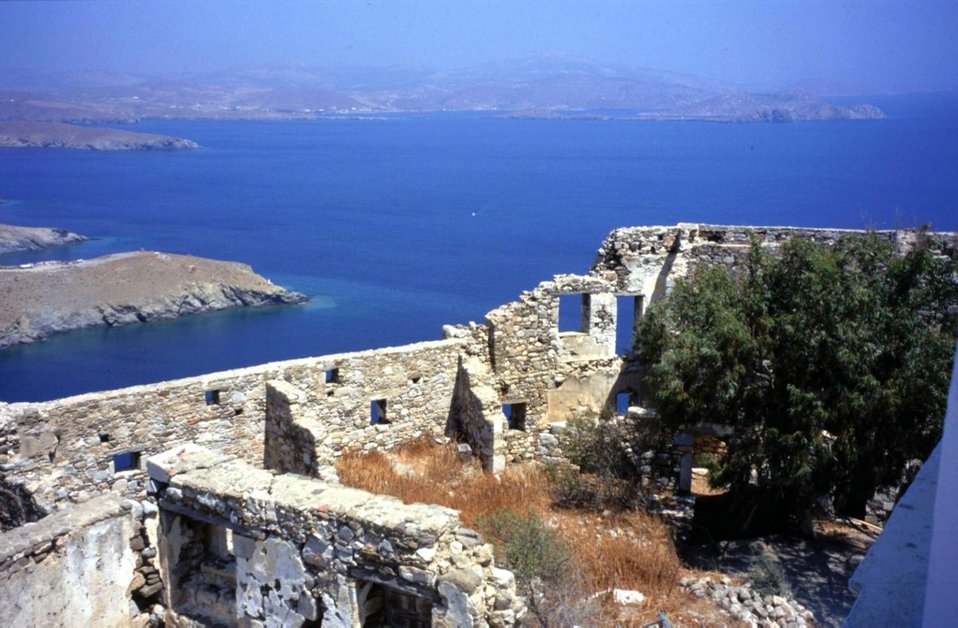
0085 Kastell auf Astipalaia